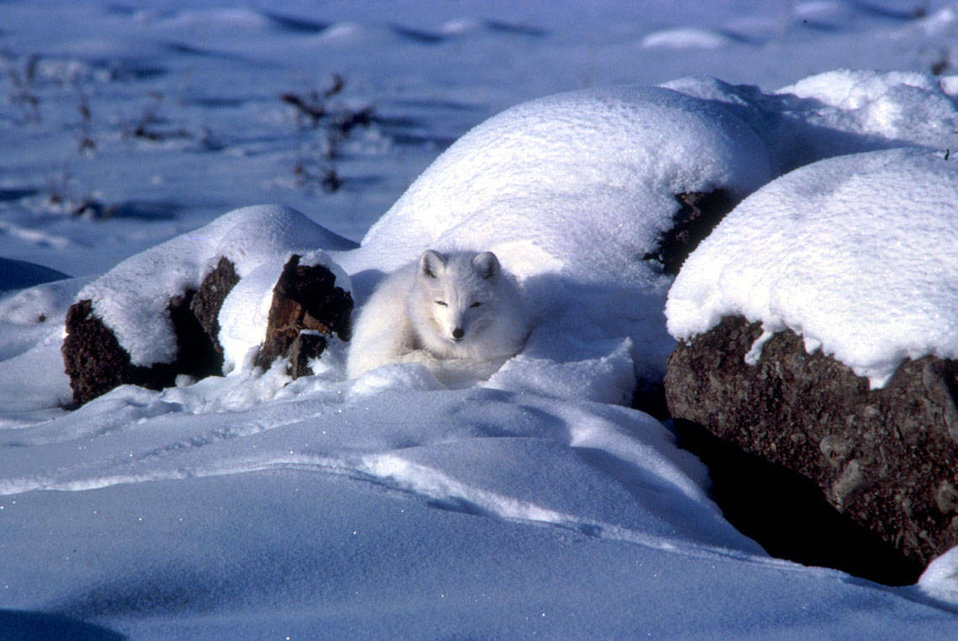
Arctic fox in snow

Photo credit: USFWS/Keith Morehouse

Species such as the red fox are increasingly able to move into previously inhospitable northern regions, which may lead to new competition and pressures on the Arctic fox